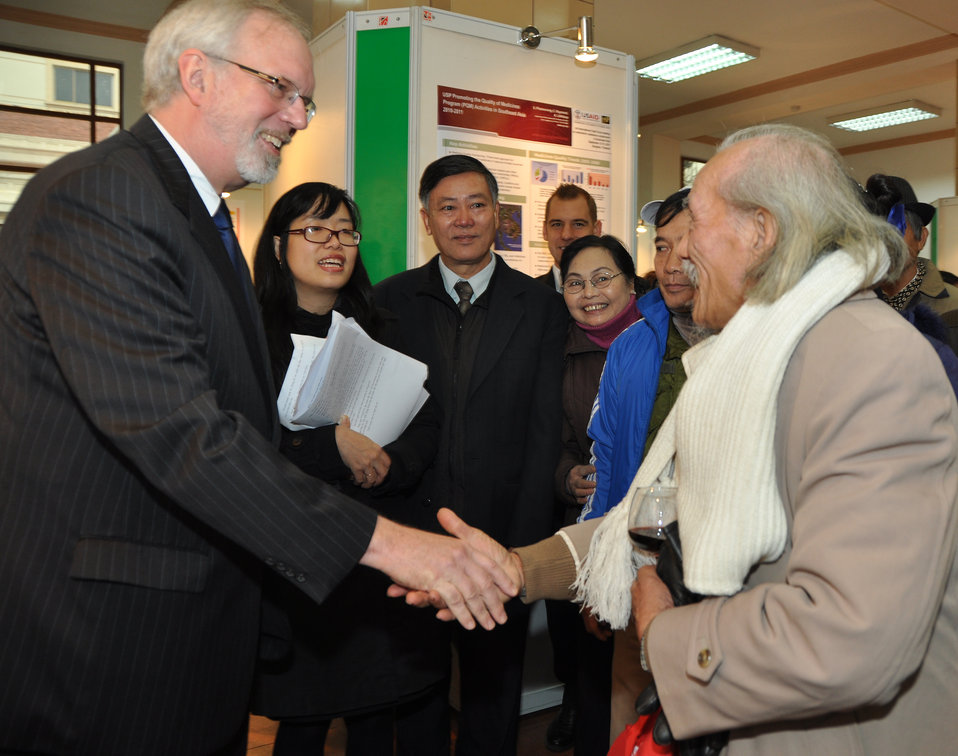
U.S. Ambassador David Shear opens safe medicine exhibition in Hanoi

Safe Medicine Exhibition